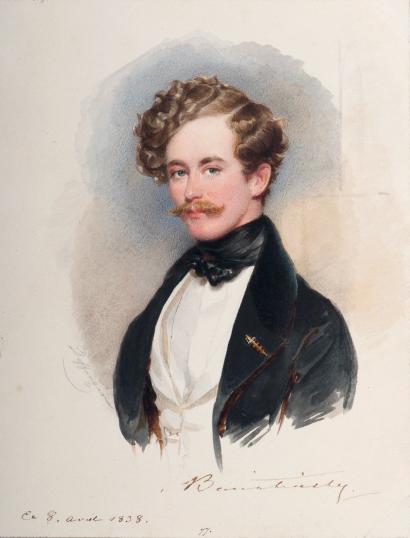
Alexander Bariatinsky by Daffinger